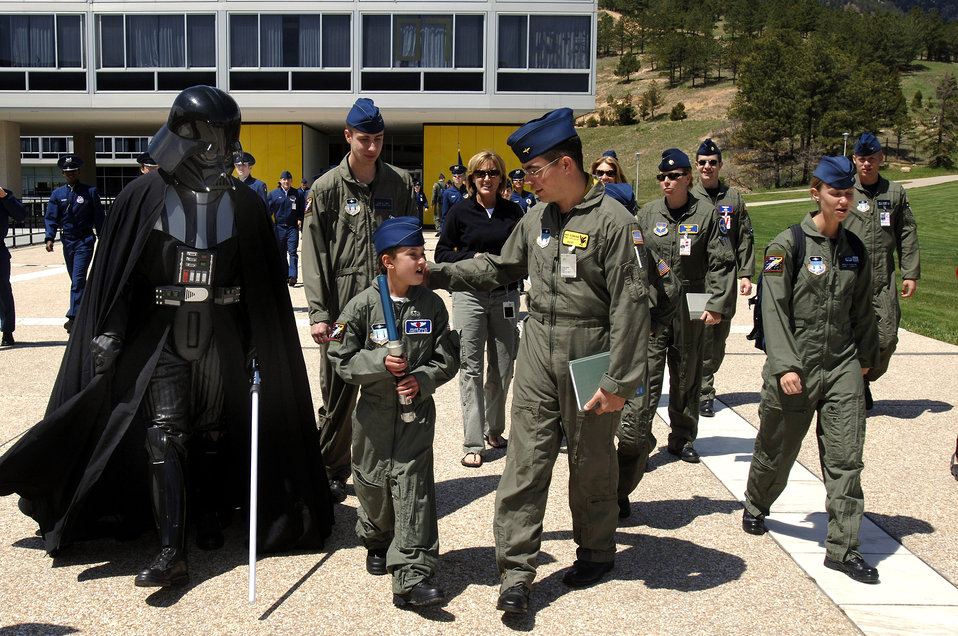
Academy honors 'Cadet for a Day' in Colorado

Ten-year-old Julian Willis is escorted by the Darth Vader character and cadets of squadron 39 to the lunchtime formation at the U.S. Air Force Academy, Colo. The Make-a-Wish Foundation and the Air Force Academy made Julian a